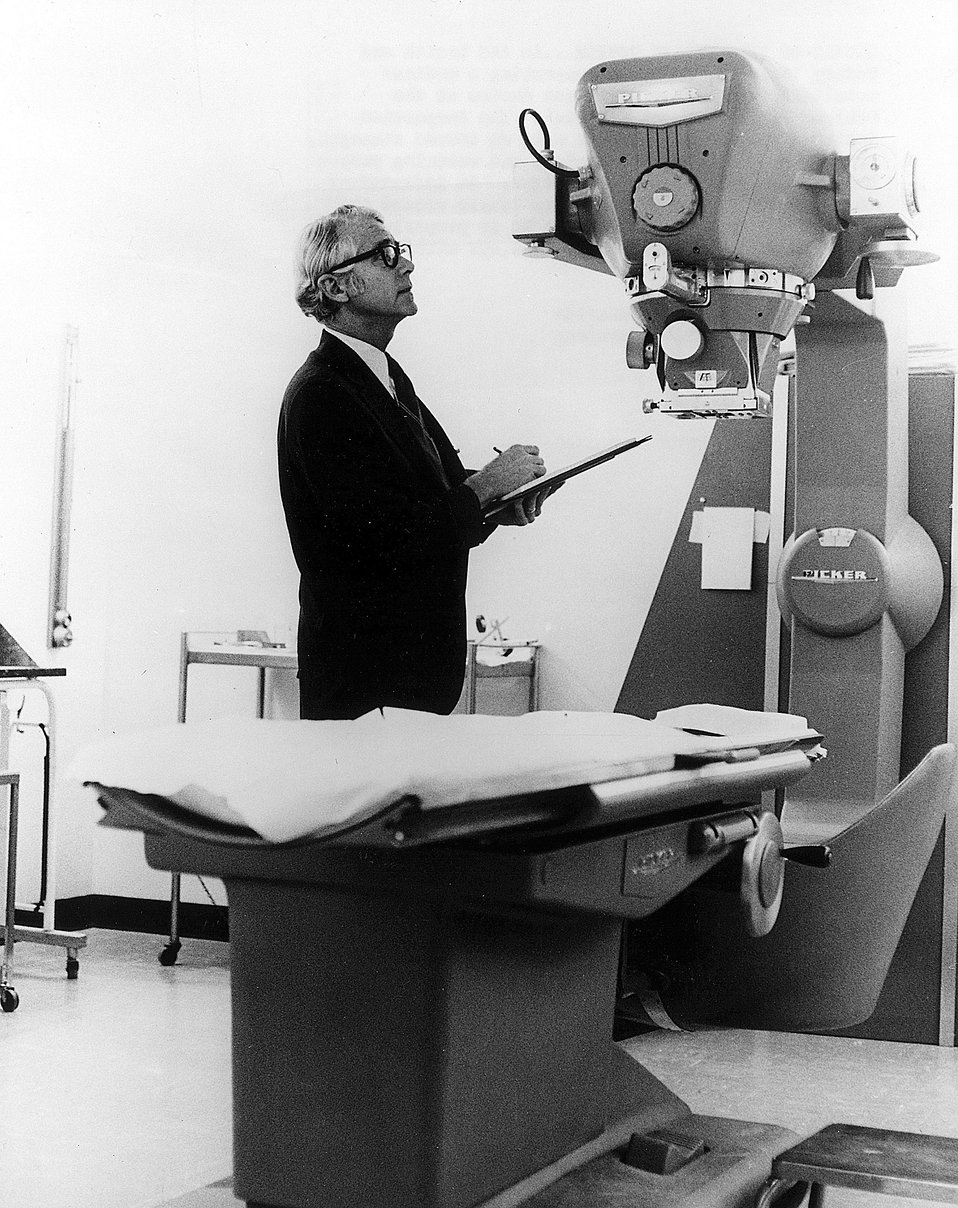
An AEC health and safety inspector is shown inspecting a medical cobalt-60 teletherapy treatment device at the Oakland (Calif.) Naval Hospital. Circa 1973.